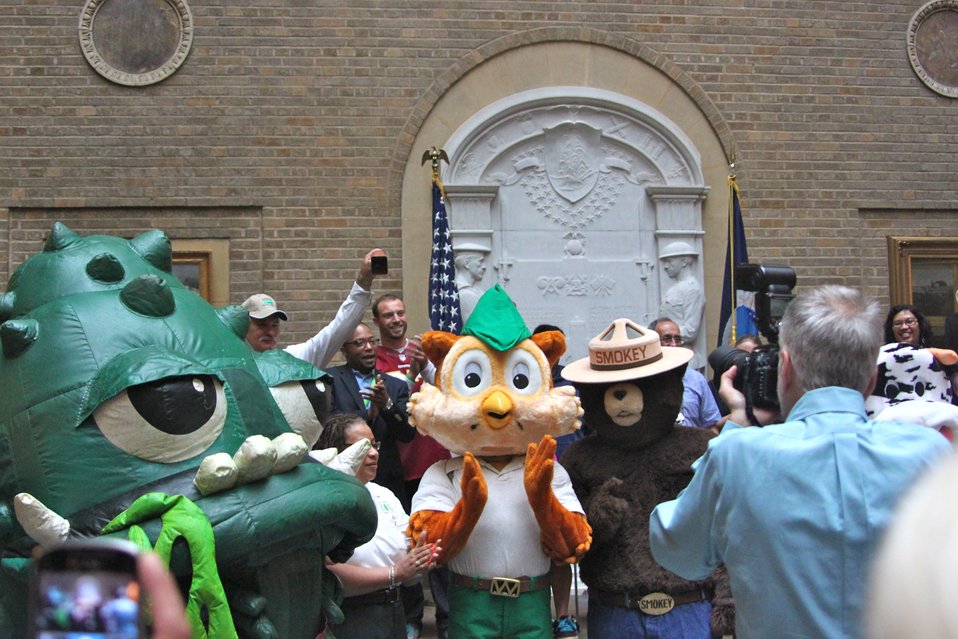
Ringing the Bell

Several special guests and members of the community were on hand to help Agriculture Acting Deputy Secretary Michael Scuse and U.S. Department of Agriculture (USDA) Agricultural Marketing Service (AMS) Administrator Anne Alonzo ring the bell to open USDA's Farmers Market on Friday, Jun. 7, 2013.